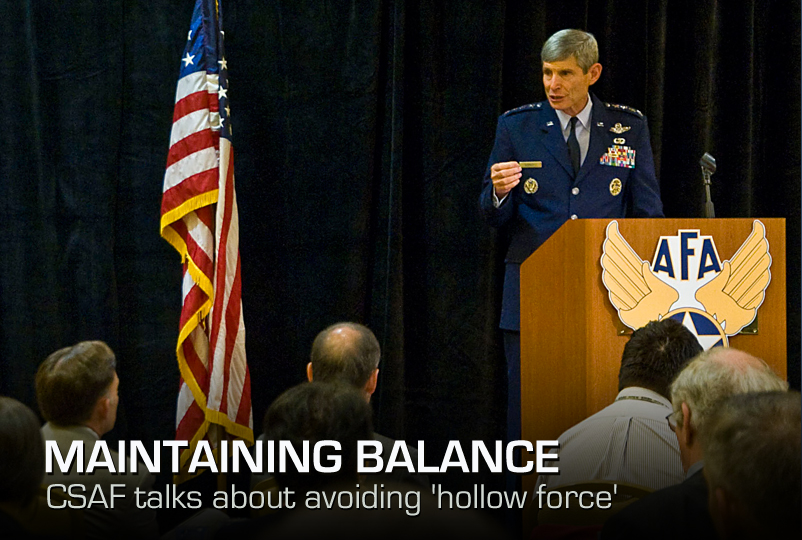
Maintaining Balance